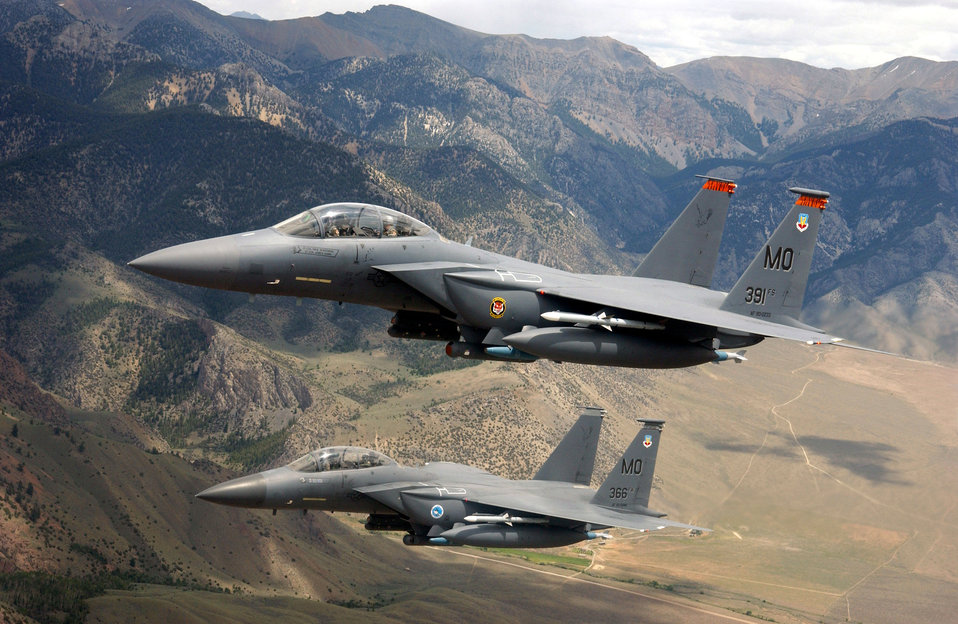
Soaring Strike Eagles

MOUNTAIN HOME AIR FORCE BASE, Idaho -- Two F-15E Strike Eagles perform a low-level training mission over the Sawtooth Mountain Range. The Strike Eagles give the 366th Fighter Wing here sophisticated air-to-ground attack capabilities and air-to-air superiority. They can be equipped with both laser-guided weapons and air-to-air missiles, and use the low-altitude navigation and targeting infrared for night, or LANTIRN system, to find and destroy targets at night in all kinds of weather with precision.